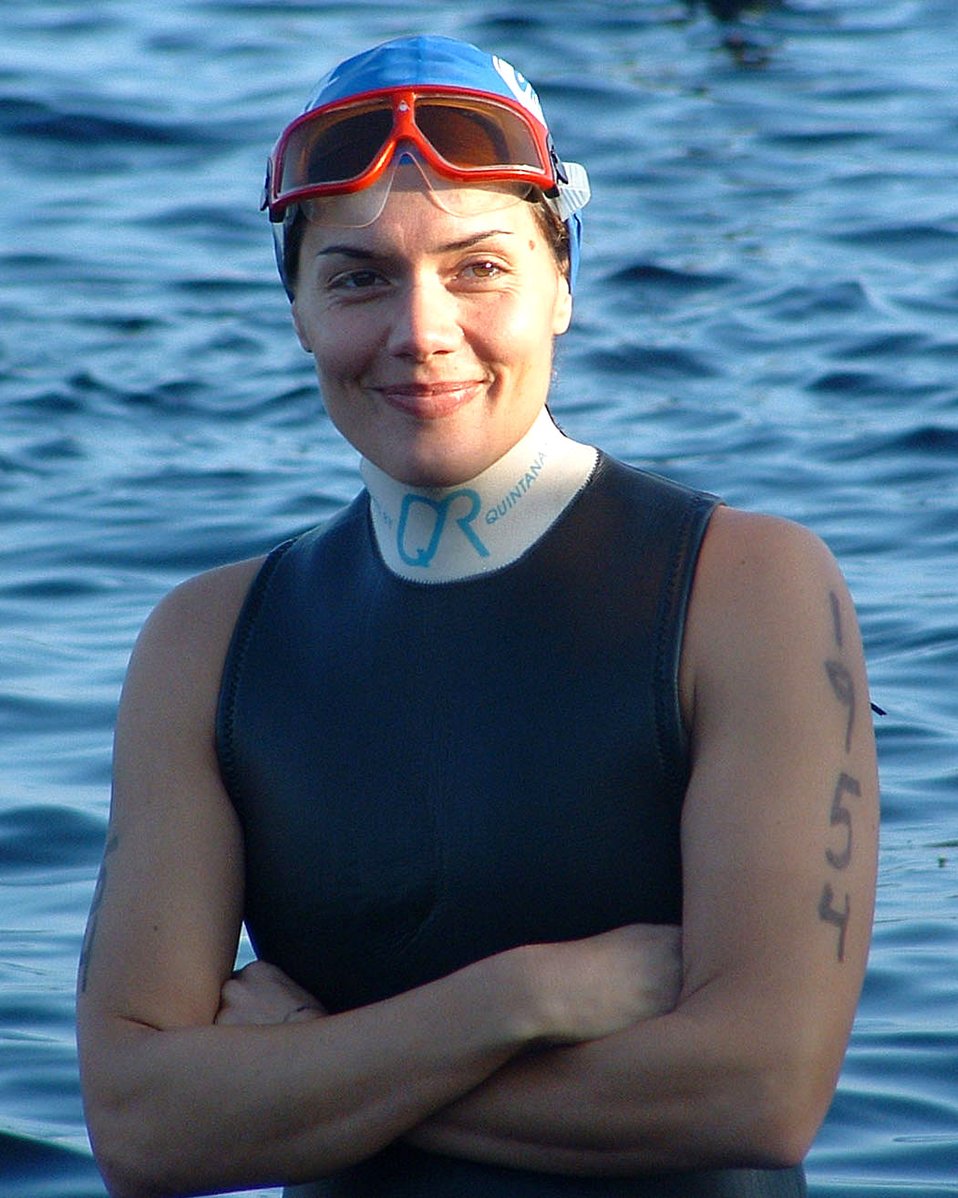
It's all about fitness

PINEHURST, N.C. (AFPN) -- 1st Lt. Kristi Porter participates in the Olympic district triathalon race here. Open water swimming is one of the three legs in the triathlon. Lieutenant Porter is with the 446th Logistics Readiness Flight at McChord Air Force Base, Wash.